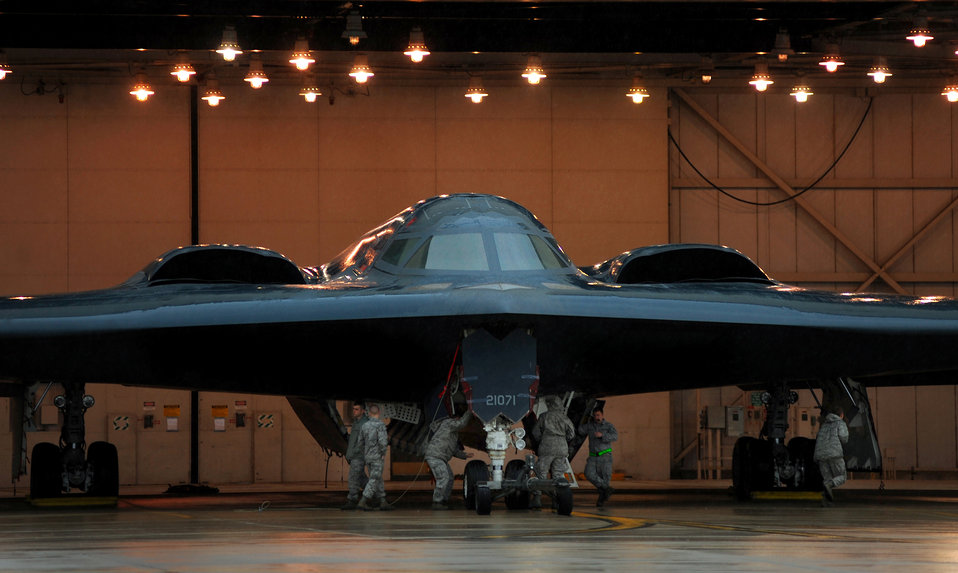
B-2 crews prepare for mission

Maintainers and crew chiefs from the 509th Aircraft Maintenance Squadron at Whiteman Air Force Base, Mo., prepare B-2 Spirits March 19, 2011, for Operation Odyssey Dawn.